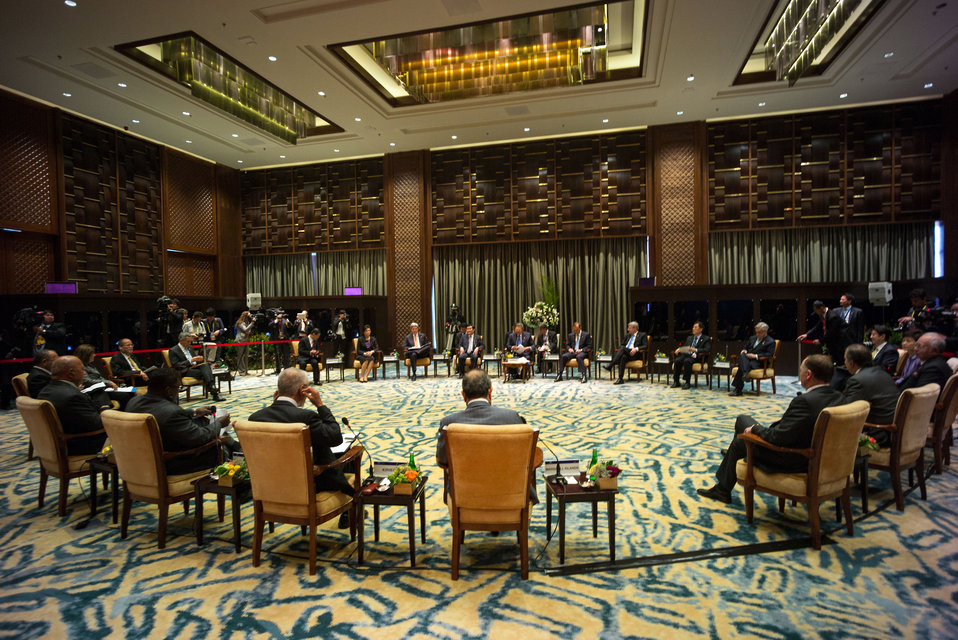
Secretary Kerry Meets With APEC Leaders

U.S. Secretary of State John Kerry meets with APEC Leaders before their informal session in Bali, Indonesia, on October 8, 2013.